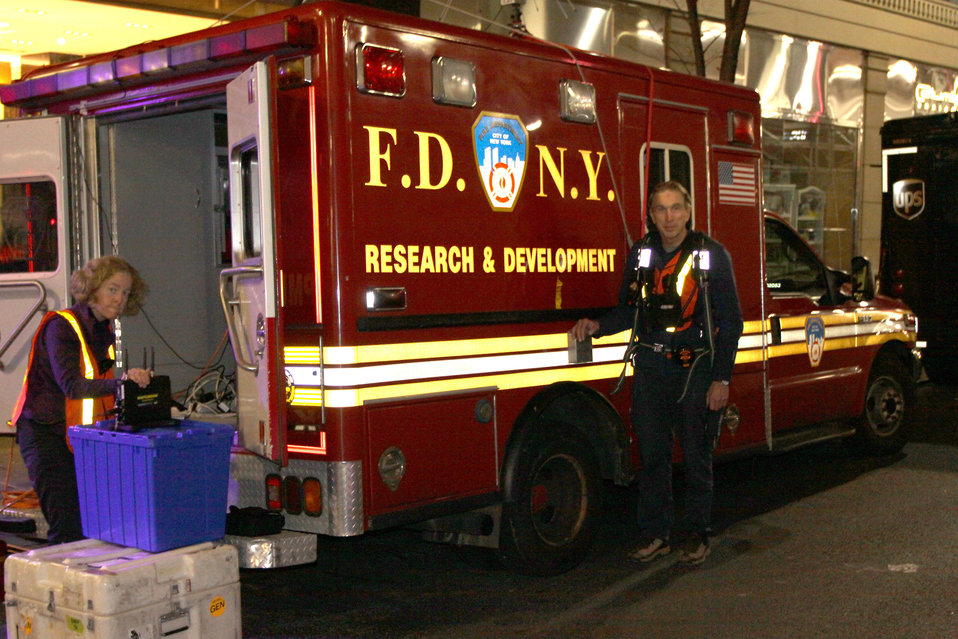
Emergency Radio Transmissions

NIST researchers visited New York City in 2012 to evaluate emergency radio transmissions in challenging settings such as high-rise buildings and underground tunnels. NIST's Kate Remley and Galen Koepke setting up a base station outside the Empire State Building.